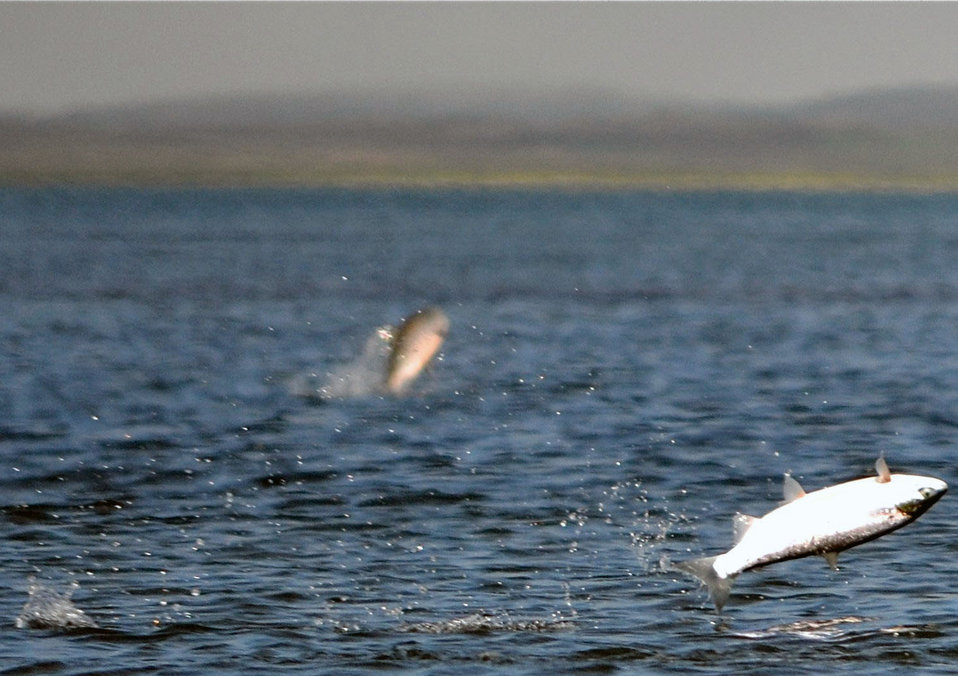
Cold Bay Jumpers

Salmon jumping in Cold Bay, Alaska, near the end of the Alaska Peninsula.